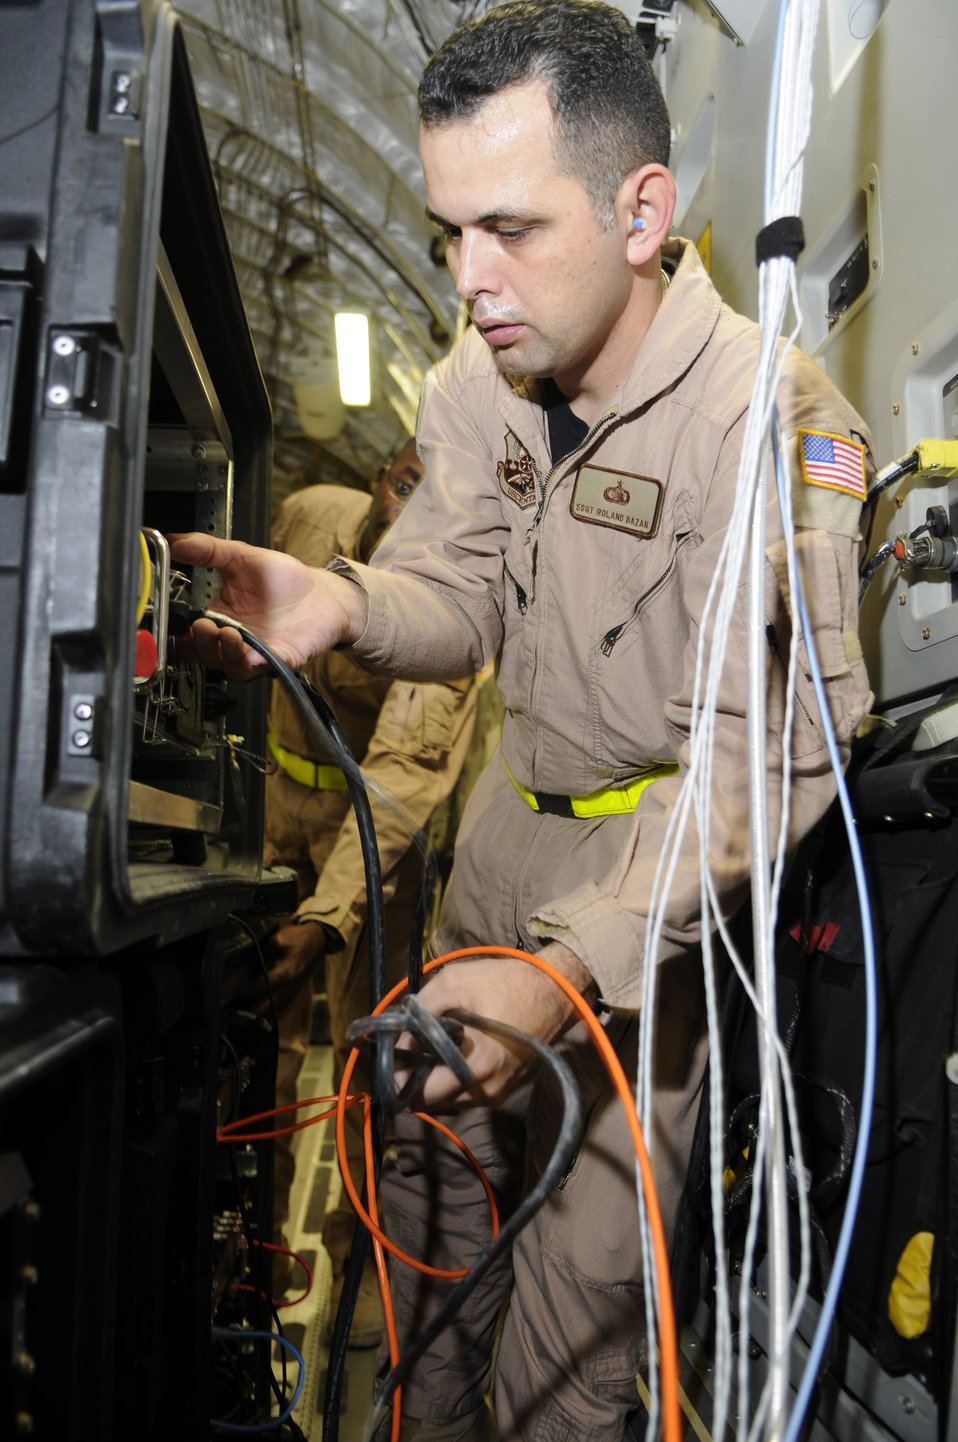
Vipers secure communication for DVs

Staff Sgt. Roland Bazan performs an operational check of a secure internet network Feb 19 at a Southwest Asia air base. Sergeant Bazan ensures everything is operable before the C-17 Globemaster III takes off. Sergeant Bazan is a member of the 379th Expeditionary Communications Squadron and is deployed from Schriever Air Force Base, Colo.